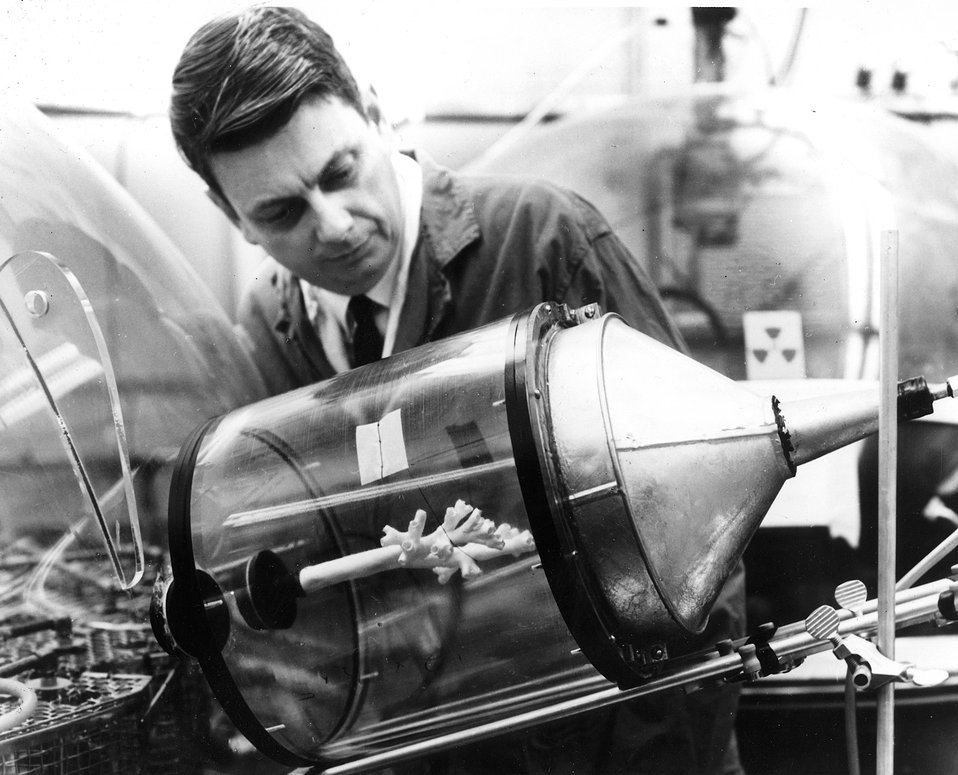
Inhalation of the decay products of radon gas, a heavy alpha-emitting gas formed by radium decay, poses a hazard in uranium mining and milling operations. c. 1972